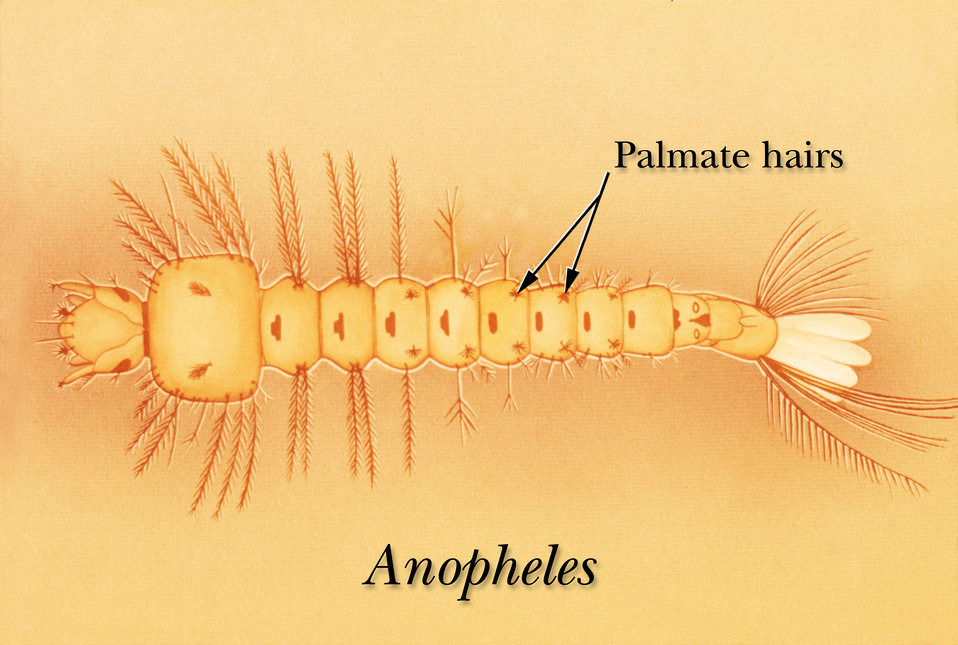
Drawing identifying palmate hairs on an Anopheles mosquito larva.